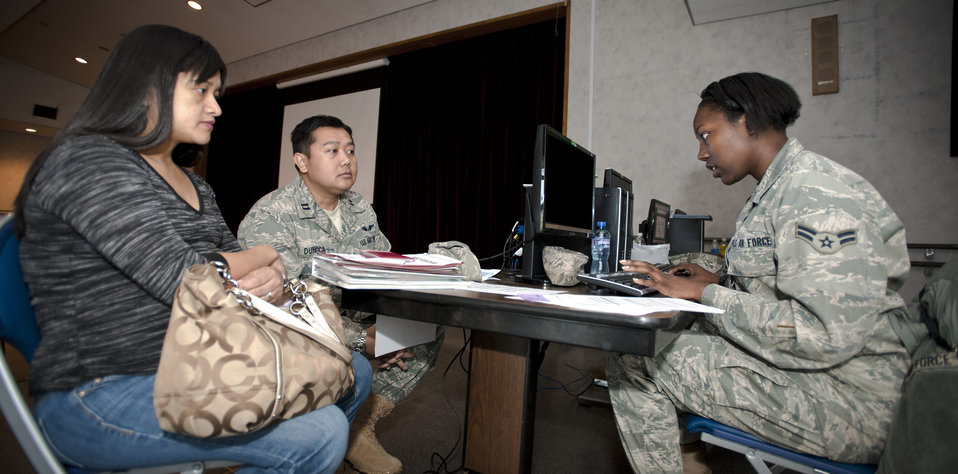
Returning families attend ReStart Briefing

Airman 1st Class Carmen Turner helps Maria Dungca, the wife of Capt. Jay Dungca, with her travel voucher at a ReStart briefing at the Airman & Family Readiness Center April 21, 2011, at Yokota Air Base, Japan. Ms. Dungca recently returned from California after the voluntary authorized departure order was lifted. Airman Turner is a 374th Comptroller Squadron finance representative.